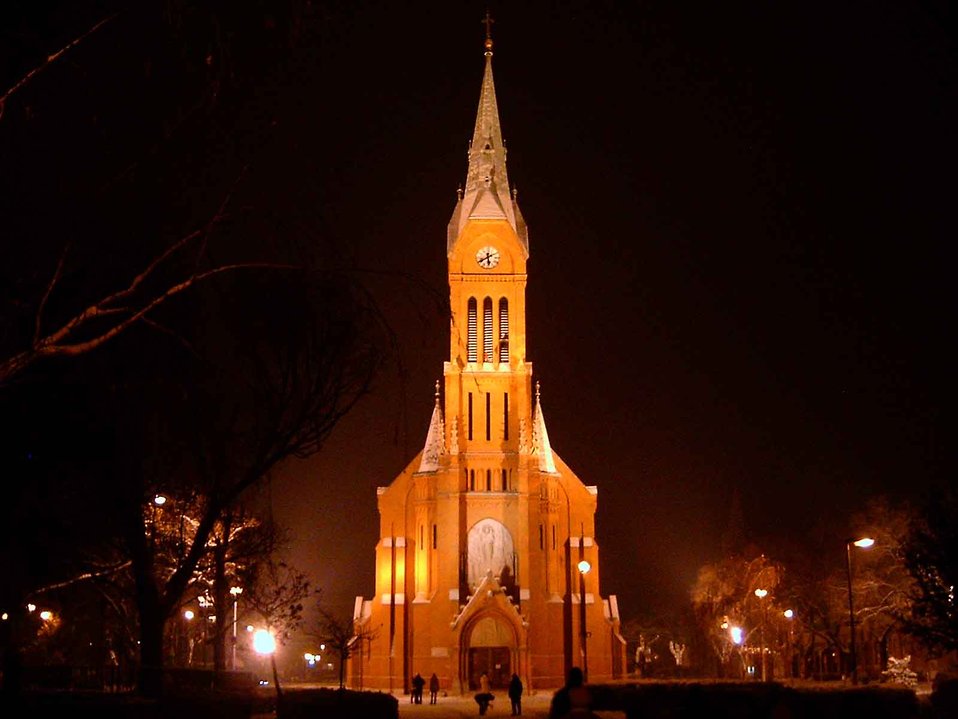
Magyar: Nagyboldogasszony Római Katolikus Templom Deutsch: Römisch-katholische Kirche Nagyboldogasszony (19. Bezirk in Budapest) Roman-catholic church Nagyboldogasszony (19th district in Budapest)